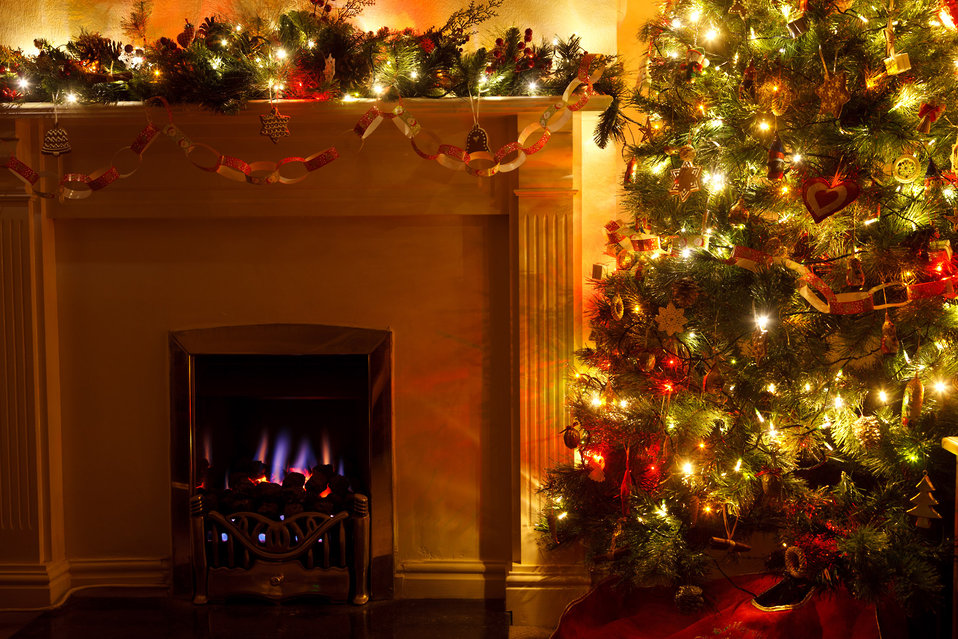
Christmas tree with fireplace

Lit christmas tree with a fireplace at night.